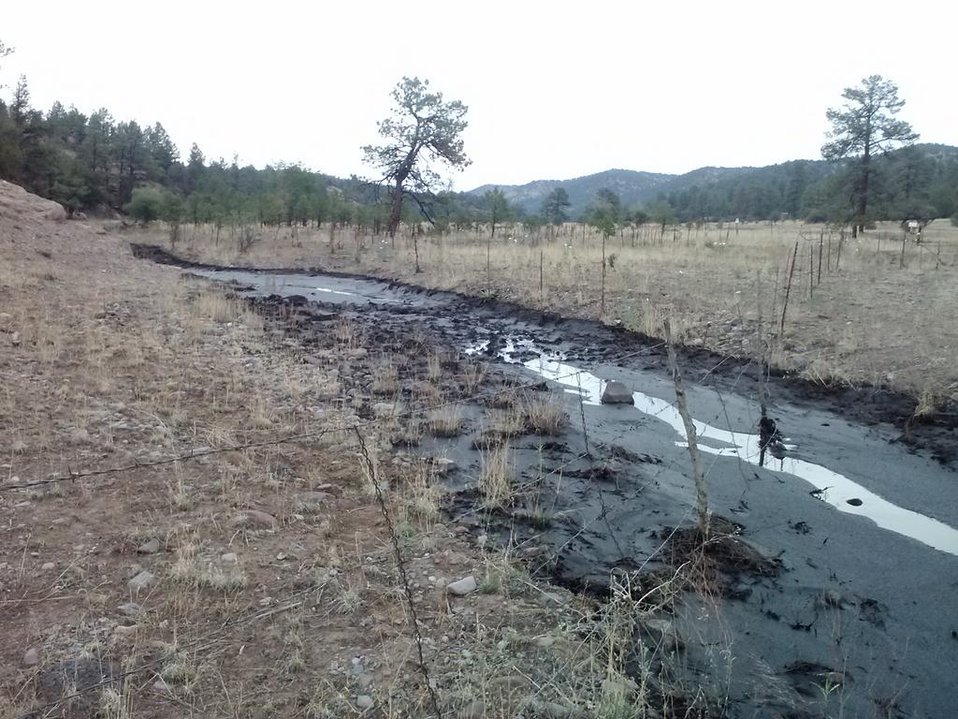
Ash flows into the Mimbres River as result of Silver Fire near Kingston, NM. The Silver Post Fire response has the Burned Area Emergency Response (BAER) team beginning operations to seed acres of high burn severity and to mulch additional acres. Seeding reduces effects to downstream life, property, and infrastructure by reducing erosion and runoff. Areas of high burn severity are to be seeded with a quick germinating, non-persistent annual cereal barley that would provide rapid ground cover. A small percentage of native perennial species would also be included to give the burned area a jump start in natural recovery, and provide for long-term ground cover. Mulch is the most effective treatment for controlling erosion and runoff, as it provides immediate ground cover. Mulch also assists in stabilizing soil in and around these areas.